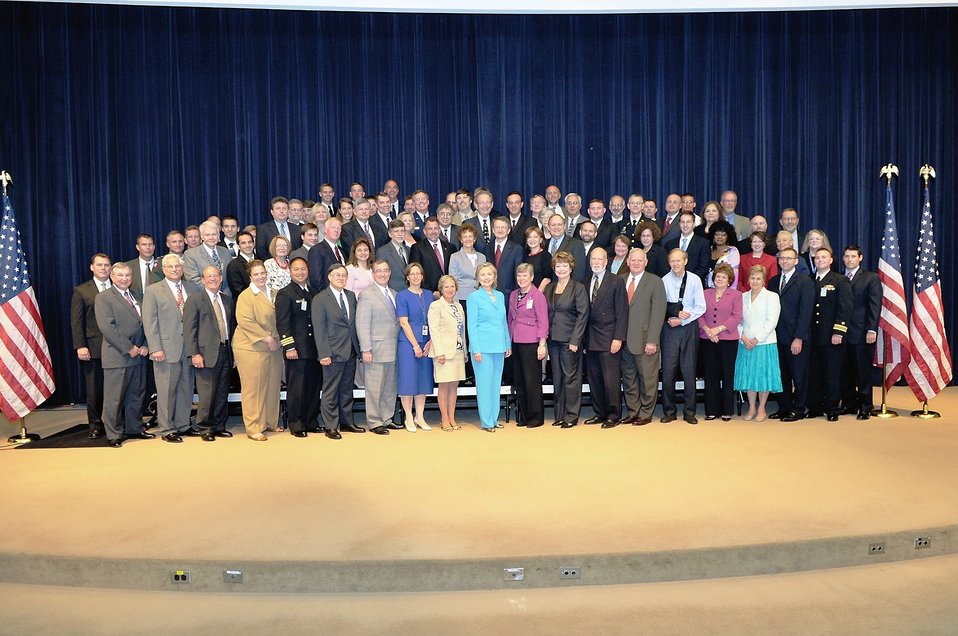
Secretary Clinton With Senior Members of the U.S. Delegation to the New START Negotiations and Nuclear Posture Review Department

U.S. Secretary of State Hillary Rodham Clinton (center) poses for a photo with the U.S. Delegation to the New START Negotiations and Nuclear Posture Review Department Staff at the U.S. Department of State in Washington, D.C., on July 13, 2010.